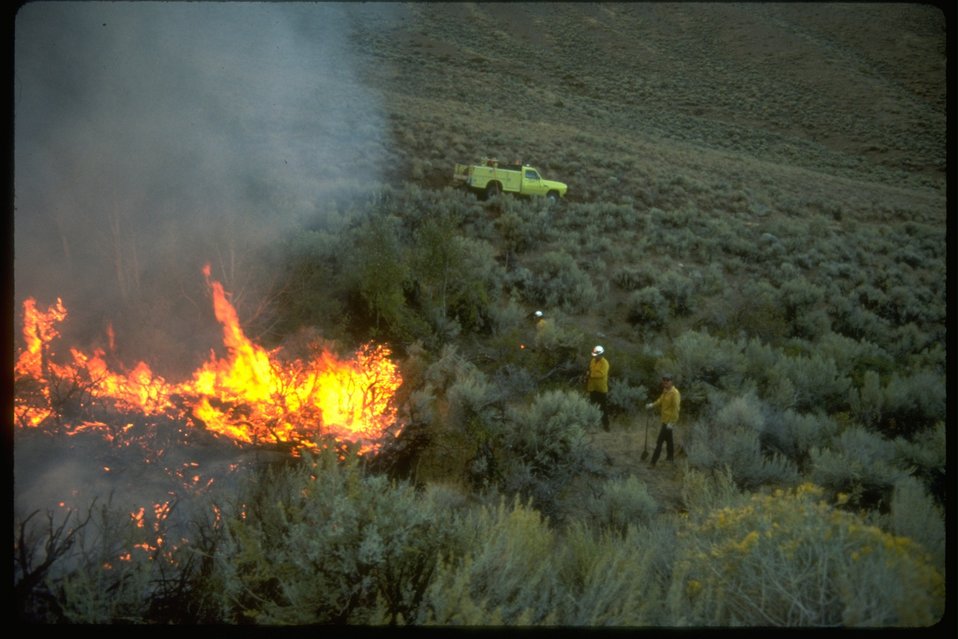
Fire crew attacking small wildfire.